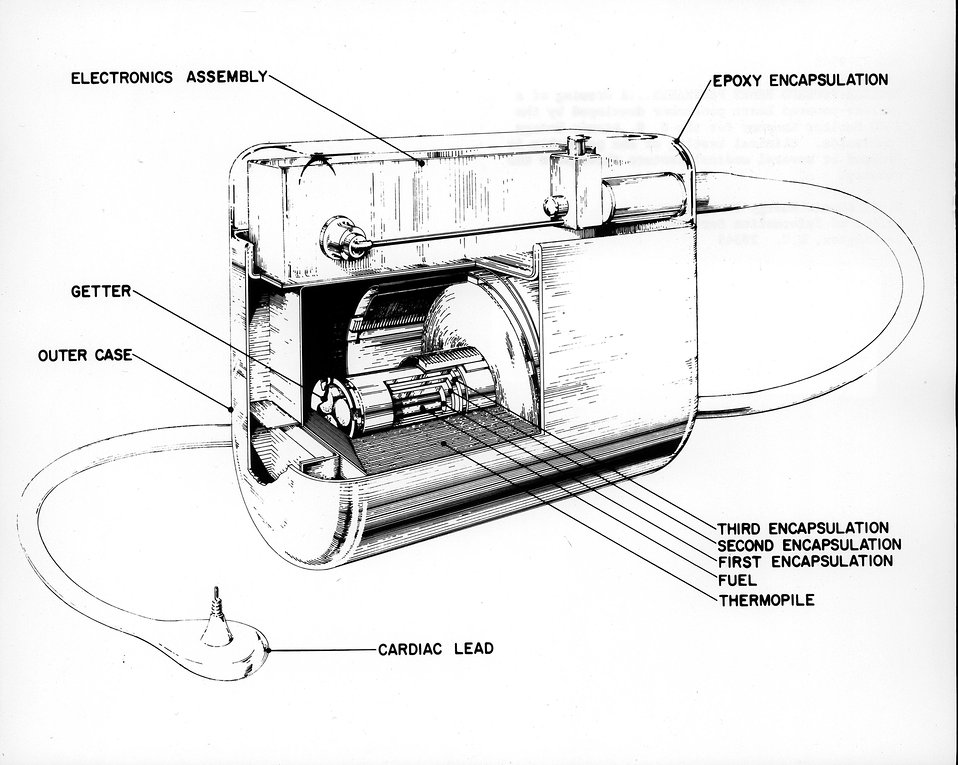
A drawing of a nuclear-powered heart pacemaker developed by the ARCO Nuclear Company for the U.S. Atomic Energy Commission. Circa 1973.